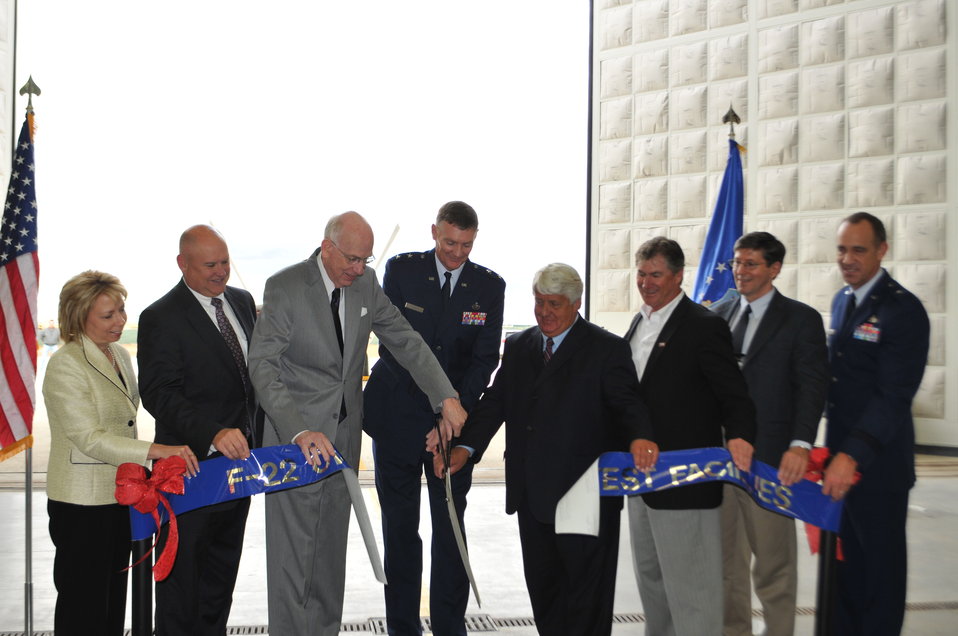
HILL AIR FORCE BASE, Utah -- Senator Robert Bennett (third from left) and Rep. Rob Bishop (fourth from right) joined Air Force Maj. Gen. Andrew E. Busch (fourth from left), commander of the Ogden Air Logistics Center, and Norbert Suter (second from right), supervisory civil engineer with the U.S. Army Corps of Engineers Sacramento District, to officially open the new F-22 Fuel Composite Overhaul Test Facility at Hill Air Force Base, Utah, Sept. 9. The facility is phase one of a two-phase complex planned for the base. The second phase consists of a $45 million, 90,000 square-feet facility, already under construction.